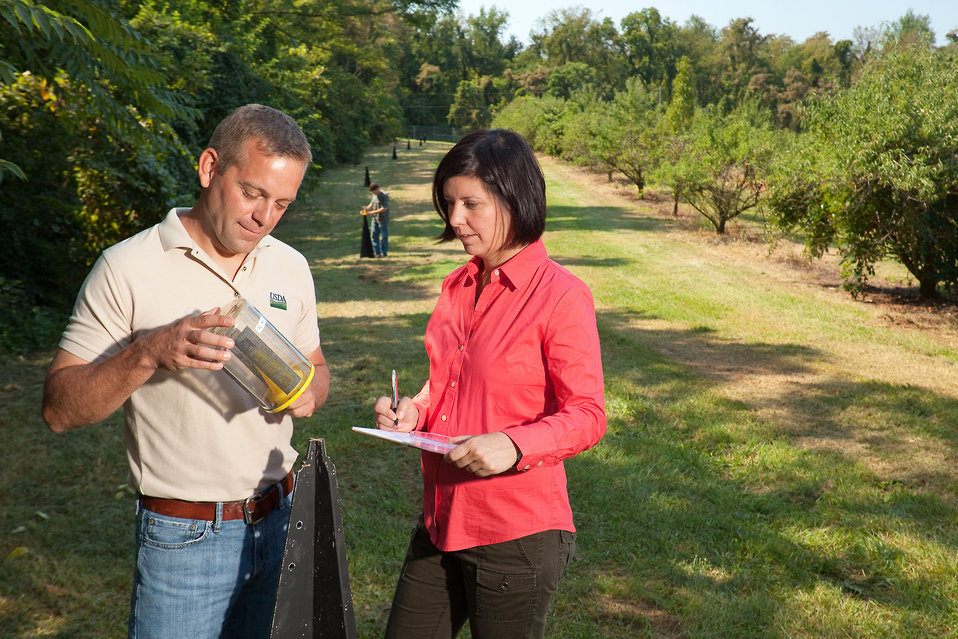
U.S. Department of Agriculture (USDA) Agriculture Research Service (ARS) support scientist Starker Wright and entomologist Tracy Leskey inspect traps baited with experimental pheromone lures on Aug. 29, 2012. The lures are being tested for brown marmorated stink bug attraction in Beltsville, MD.